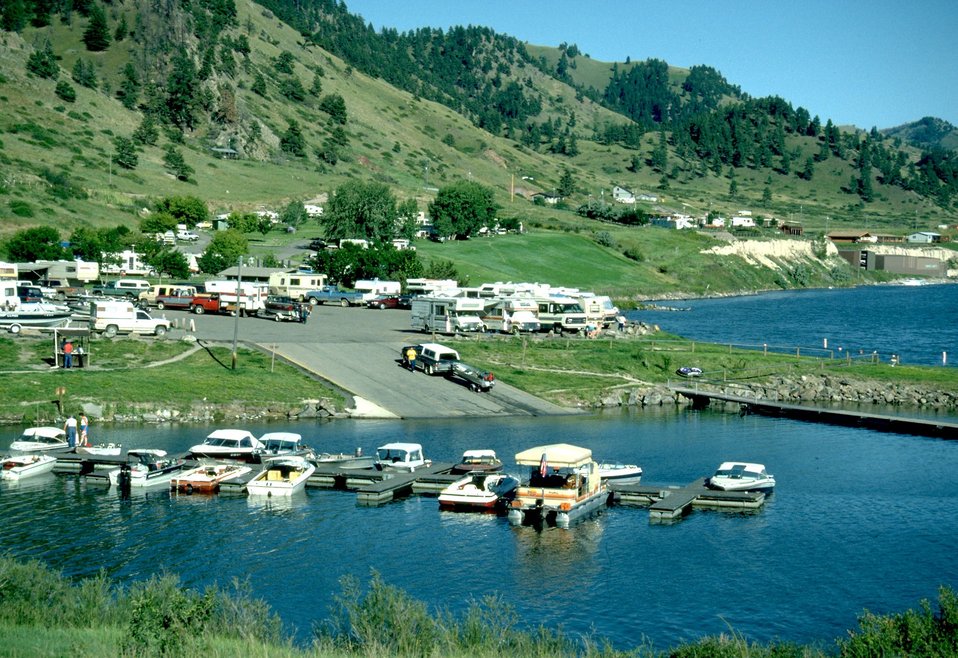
Holter Lake Campground